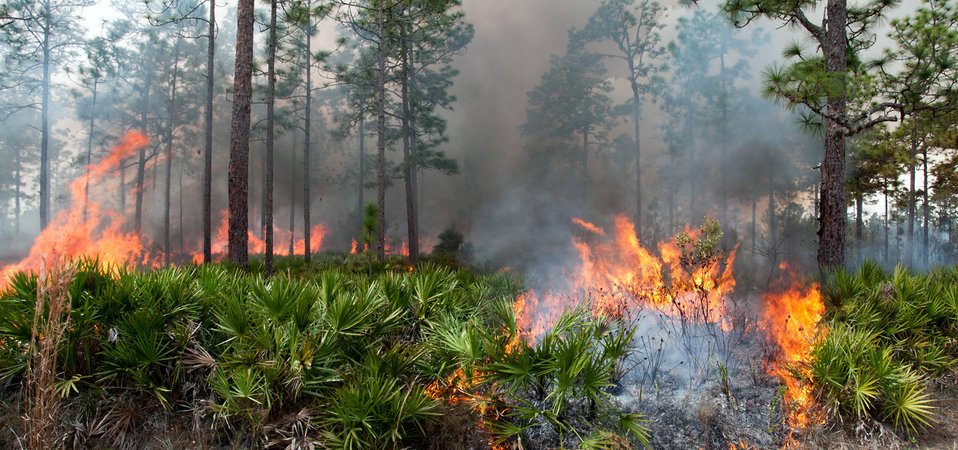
Lake Woodruff Volusia 5 Prescribed Fire Febuary 2014

On February, 12 2014 USFWS firefighters conducted a 137 acre prescribed fire at Lake Woodruff NWR to reduce the wildfire risk and enhance the wildlife habitat on the southern end of the refuge.